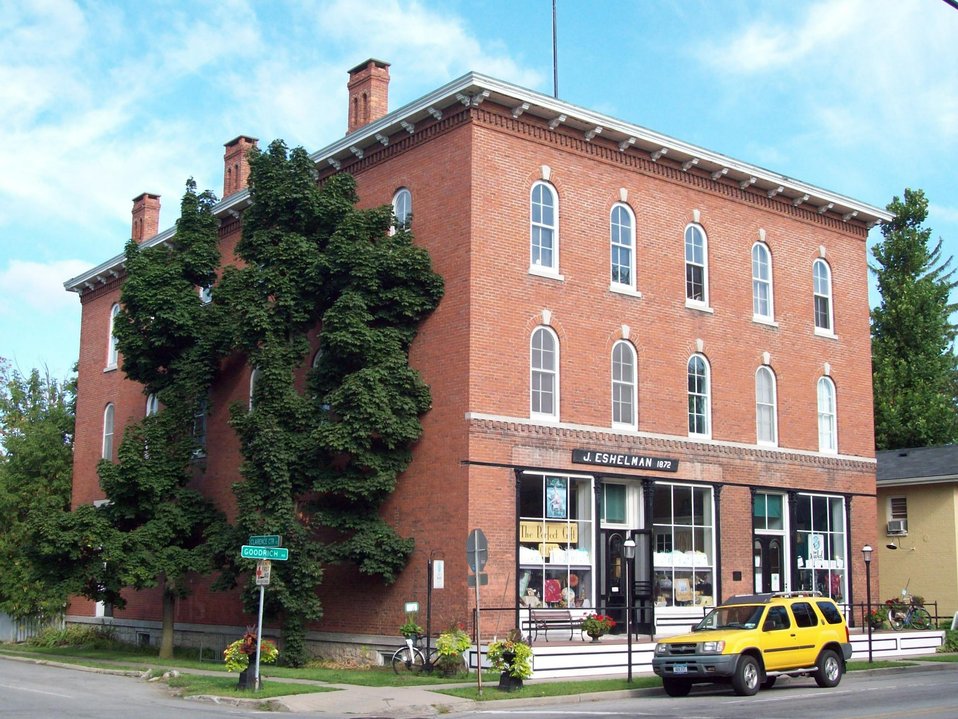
J. Eshelman and Company Store, August 2010